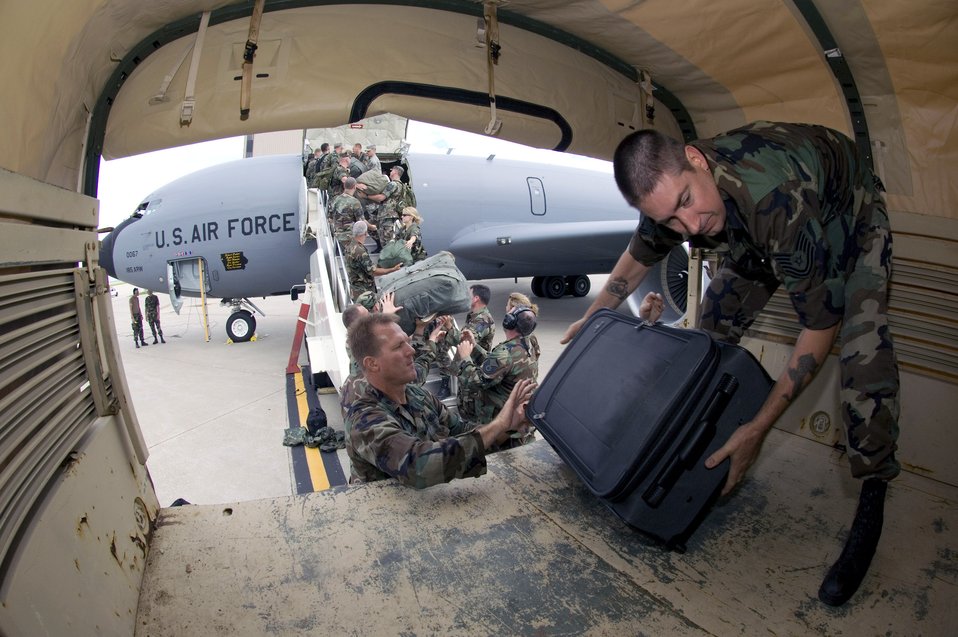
Getting the job done

Members of the Iowa Air National Guard's 185th Air Refueling Wing unload gear at the Eastern Iowa Airport in Cedar Rapids, Iowa. State officials activated the National Guard to aid recovery efforts after massive flooding caused evacuations from towns along major rivers.